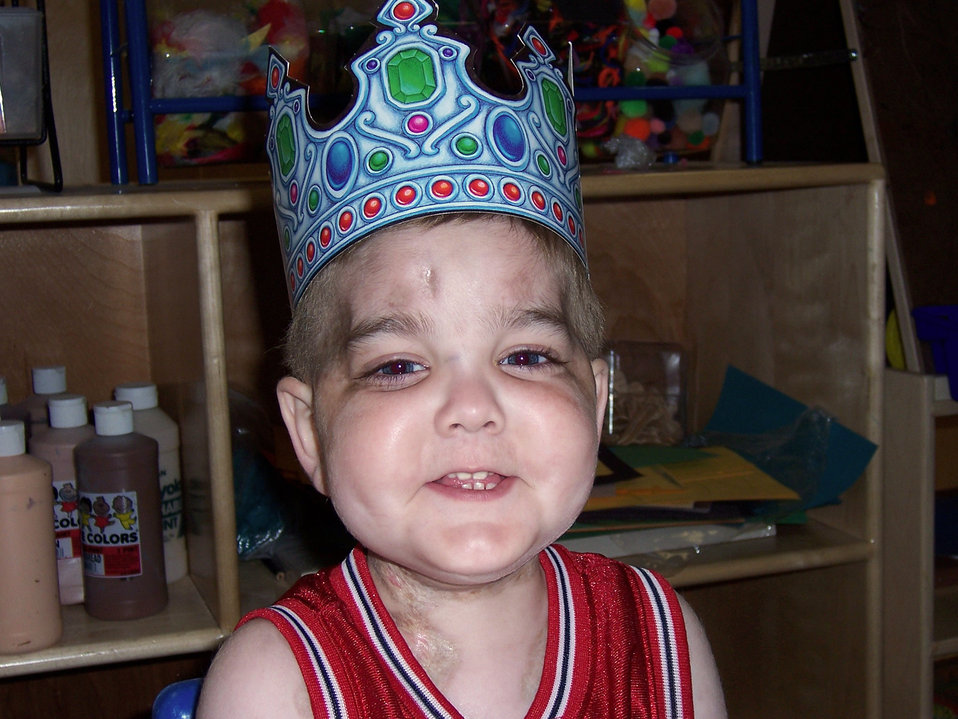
Courage embodied by Hanscom child

HANSCOM AIR FORCE BASE, Mass. -- Connor Tierney celebrates his fourth birthday at the child development center here. He was recently diagnosed with a rare lung disease called bronchiolitis obliterans caused by treatments for the leukemia he was diagnosed with at 4 months old.